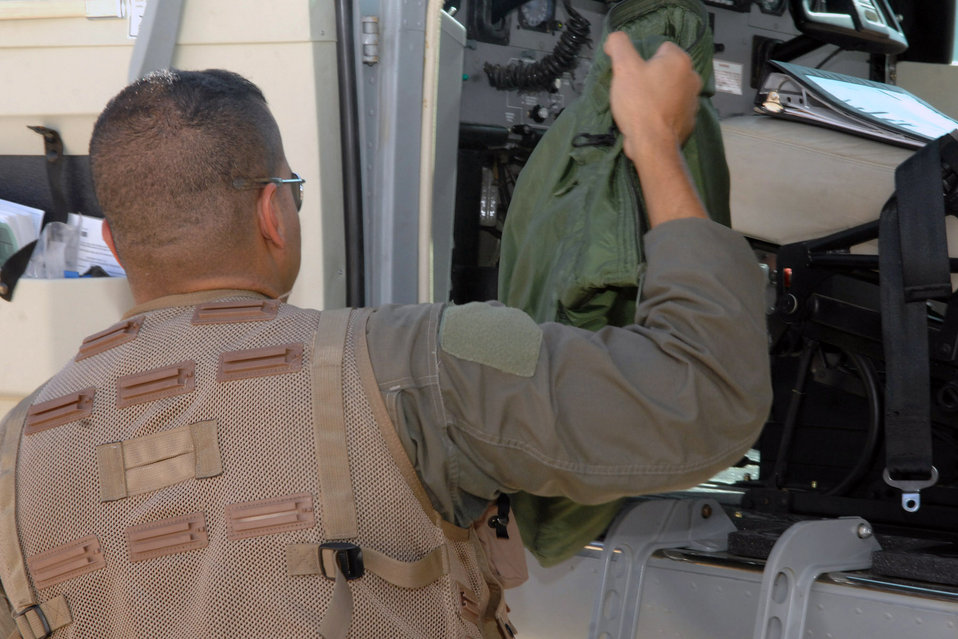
Iraqi training wing soars to 3,000th hour

Iraqi air force 2nd Lt. Hassan retrieves his flight bag from a Cessna 208 Caravan at Kirkuk Regional Air Base, Iraq, after completing his final check ride and surpassing the Iraqi air force's 3,000th flying training hour Sept. 23. Lieutenant Hassan is a student pilot with the Iraqi air force Flying Training Wing.